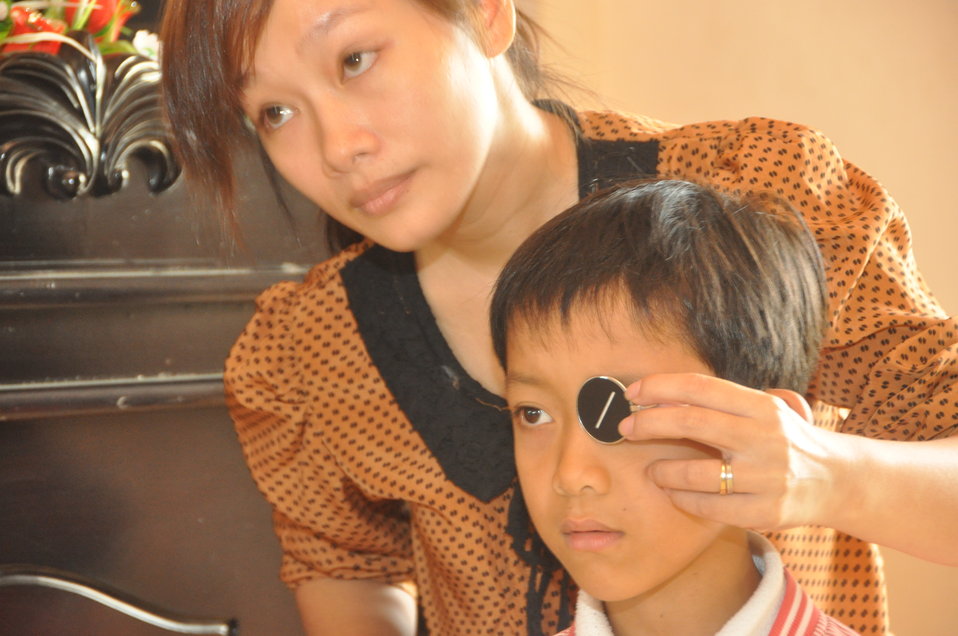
School children in Dak To, Kon Tum Province, receive eyeglasses under a program supported by USAID and partners HKI and World Learning